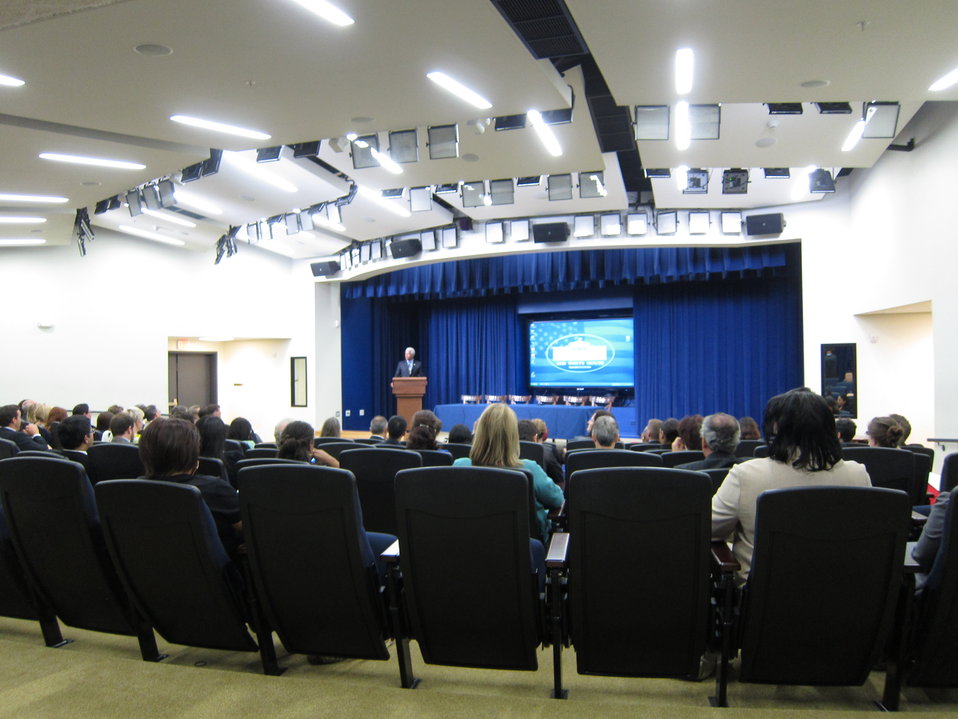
WH 2012 World Hepatitis Day Event